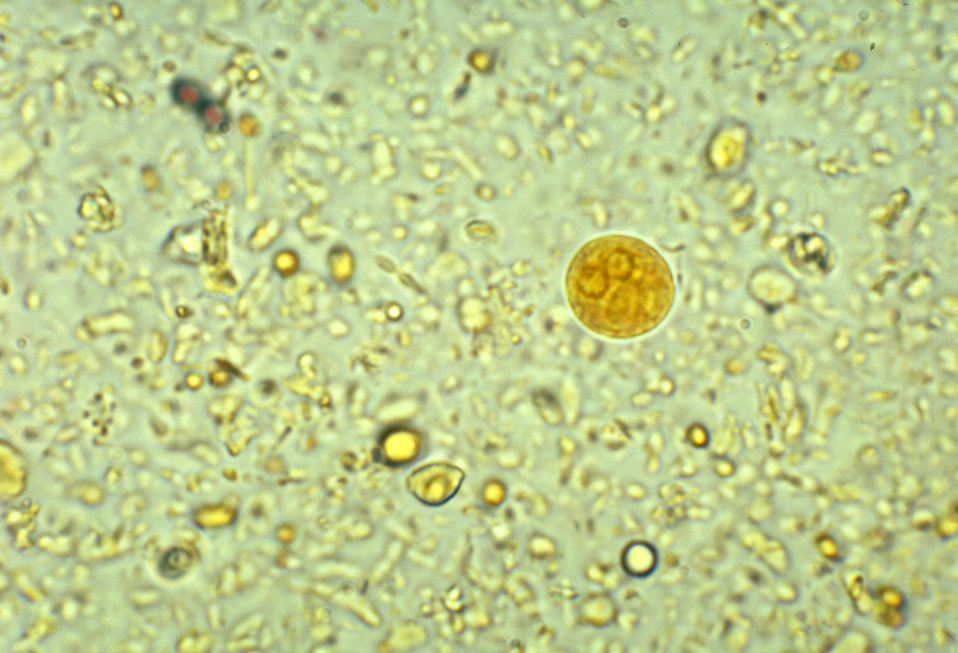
This photomicrograph depicts a binucleated cyst of an Entamoeba histolytica amoebic parasite, displaying a visible glycogen mass.